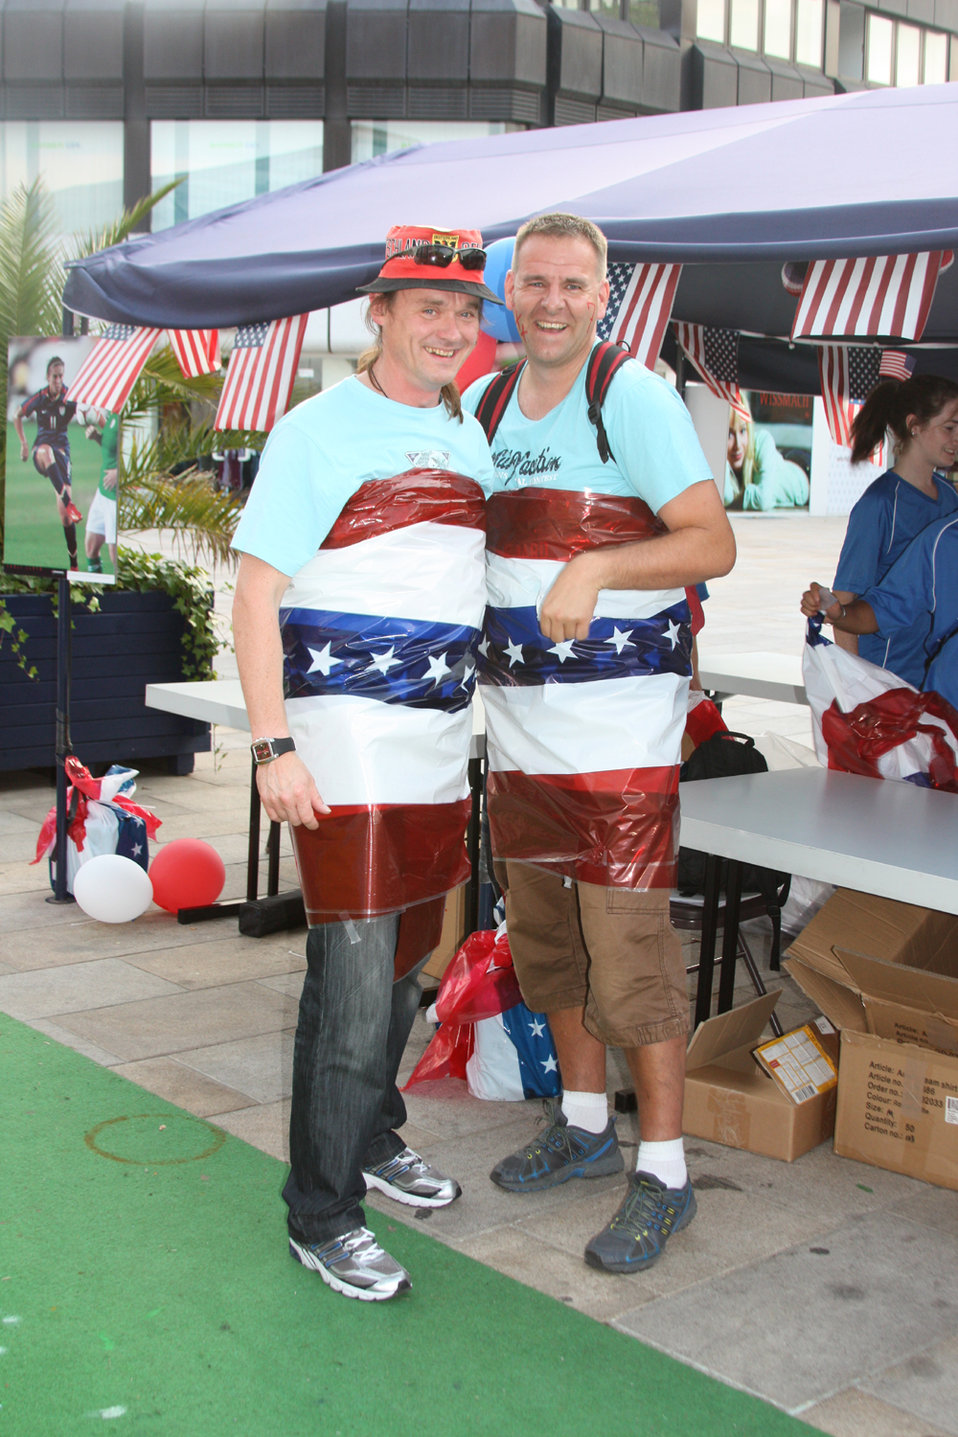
U.S. Women's Soccer Fans Smile for a Photo at the 'Fanmeile'

U.S. women’s soccer fans smile for a photo at the “Fanmeile” in Wolfsburg, Germany, July 6, 2011.